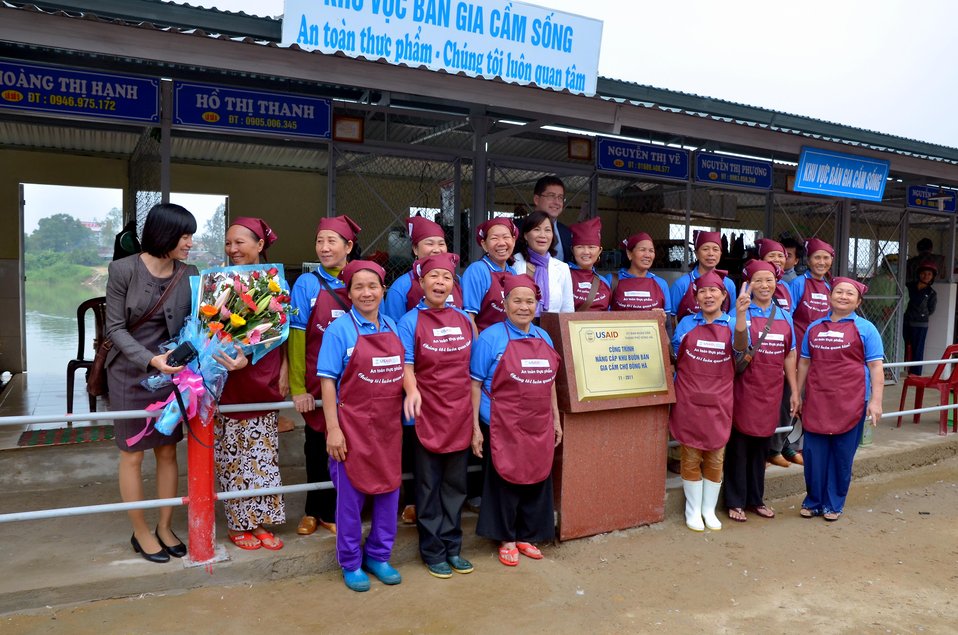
Disease Risk Reduction in Dong Ha Poultry Market, Quang Tri

Photo by Jens Peter Dalsgaard/USAID's Avian and Pandemic Influenza Initiative project team; December 5, 2011